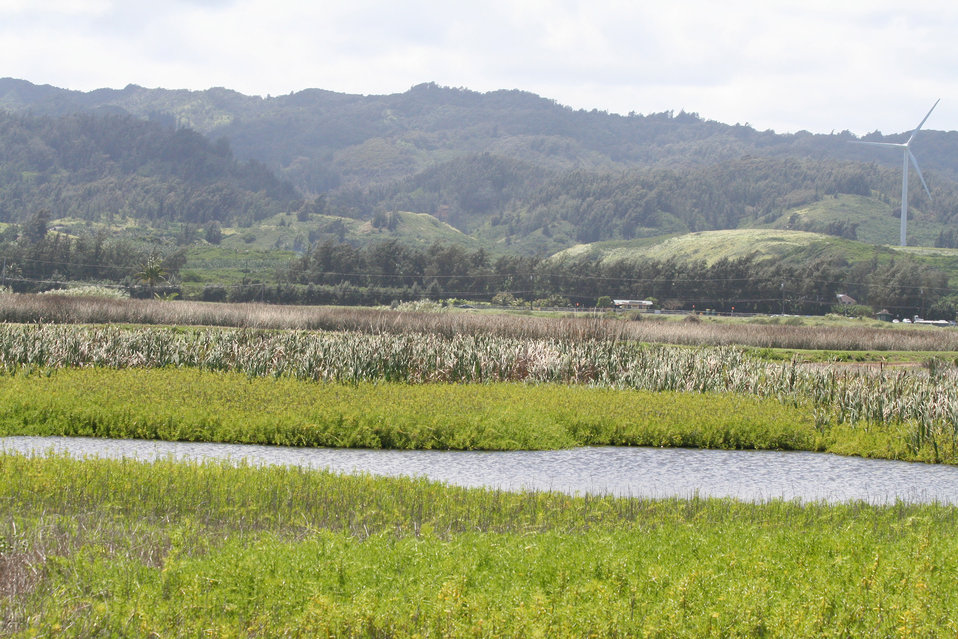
Wetlands at James Campbell NWR.